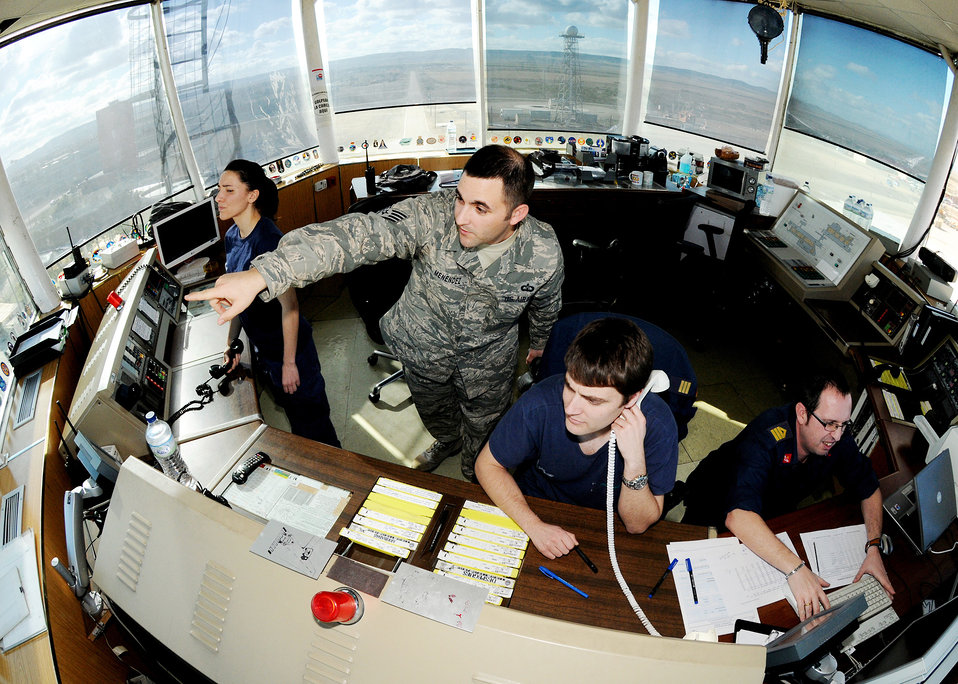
Training in Zaragoza

Staff Sgt. Joe Menendez assists Spanish air force air traffic controllers Feb. 1, 2010, at Zaragoza Air Base, Spain. Sergeant Menendez ensures proper communication between the U.S. pilots and Spanish ATCs to maintain safe missions. Sergeant Menendez is an air traffic control liaison for Spain.